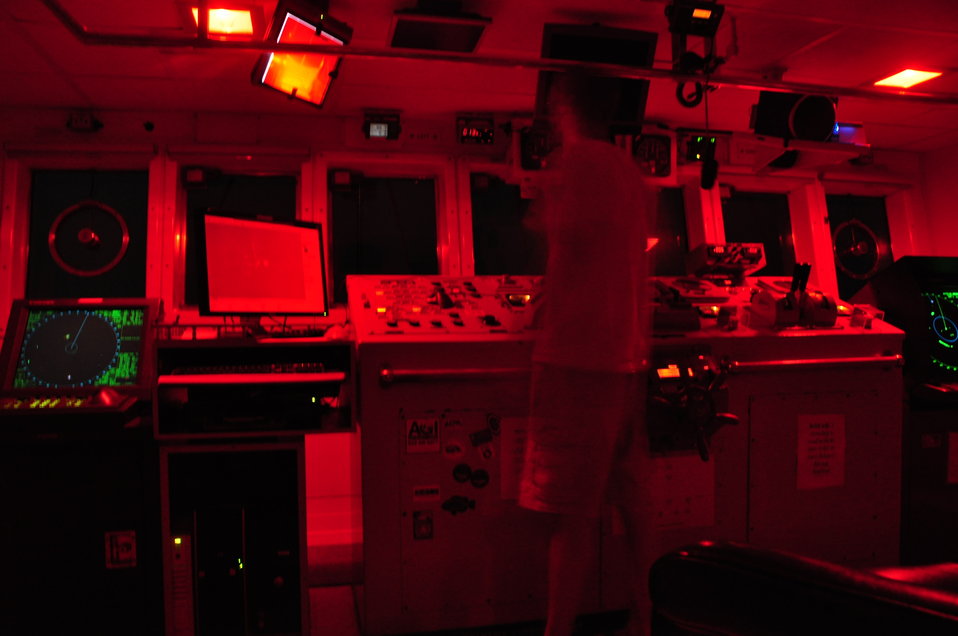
August 2009, Night view from the bridge

Radar and other navigation equipment becomes a lot more important in the middle of the night.